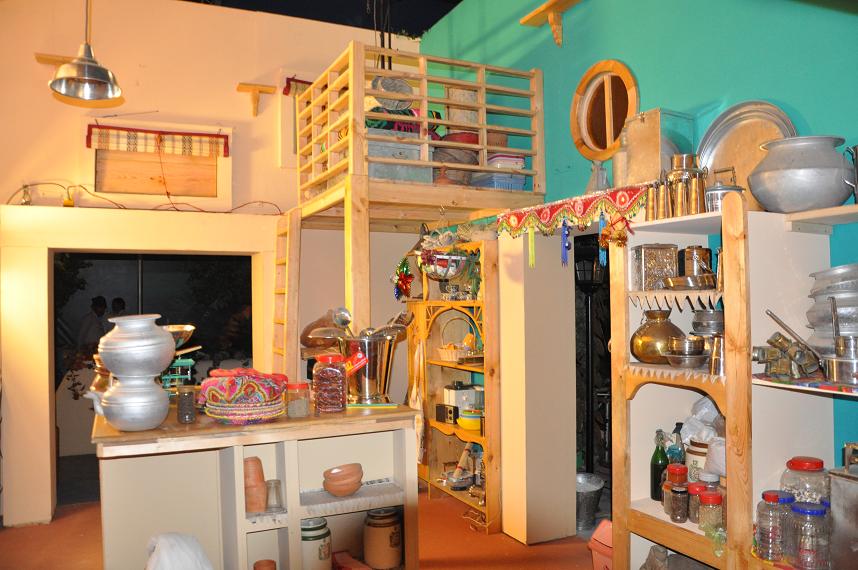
Sim Sim Hamara set.